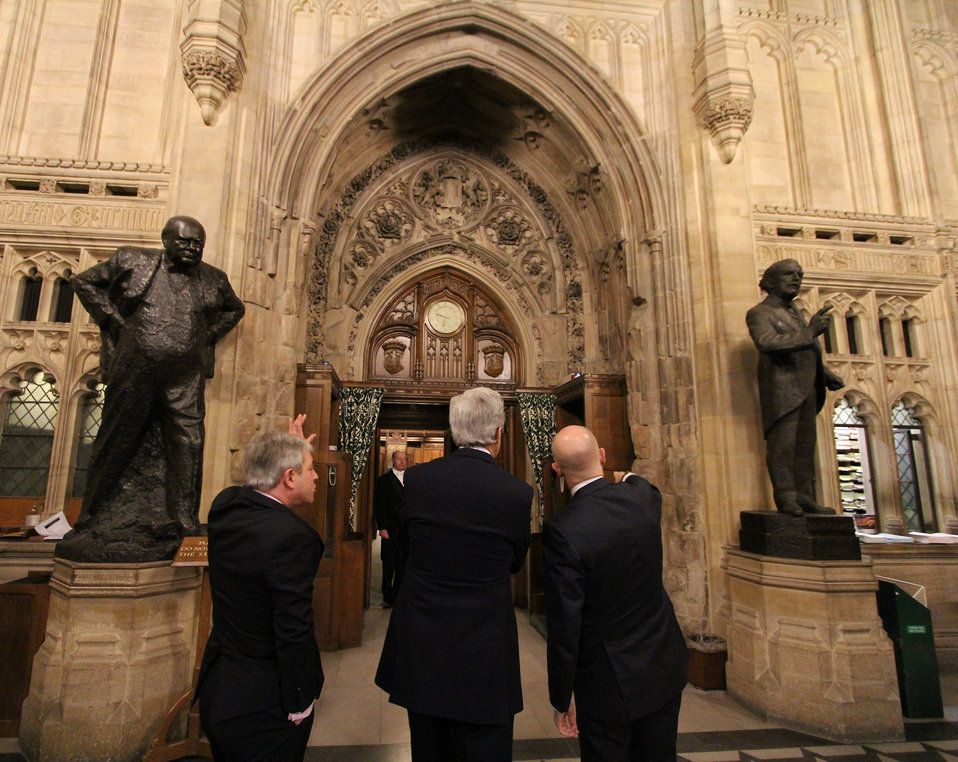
Secretary Kerry Visits UK Parliament

UK House of Commons Speaker John Bercow, U.S. Secretary of State John Kerry, and UK Foreign Secretary William Hague look at World War II bomb damage to the entrance to the House of Commons at UK Parliament in London, United Kingdom, February 25, 2013.